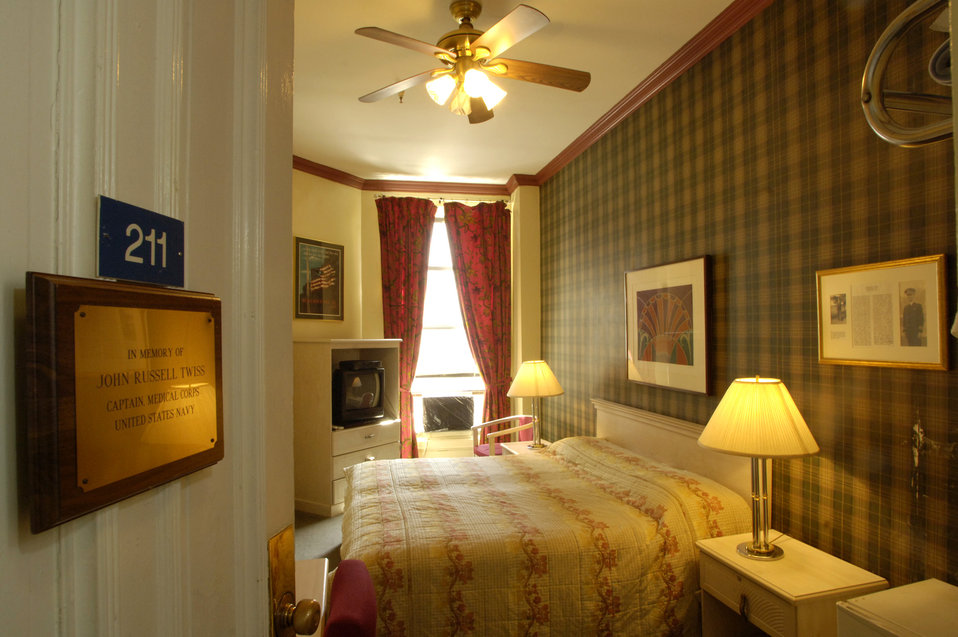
Manhattan's cheapest lodging for 'Those Who Serve'

A typical room at the Soldiers', Sailors', Marines' and Airmen's Club in Manhattan, this one has been renovated in honor of Navy Capt. John Russell Twiss. Many rooms are decorated in honor of servicemembers from all branches.